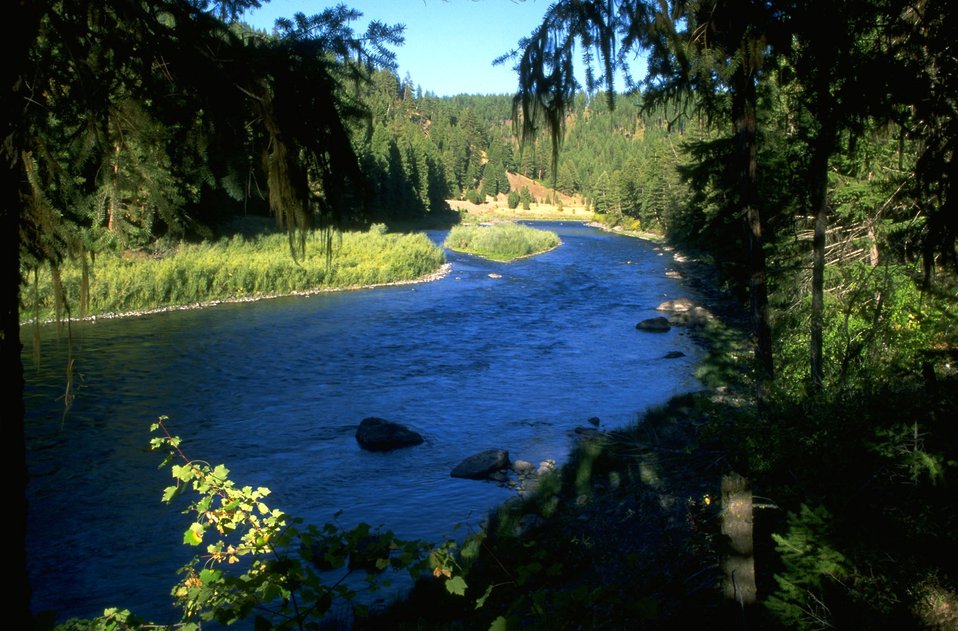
Scenic shot of the Blackfoot River